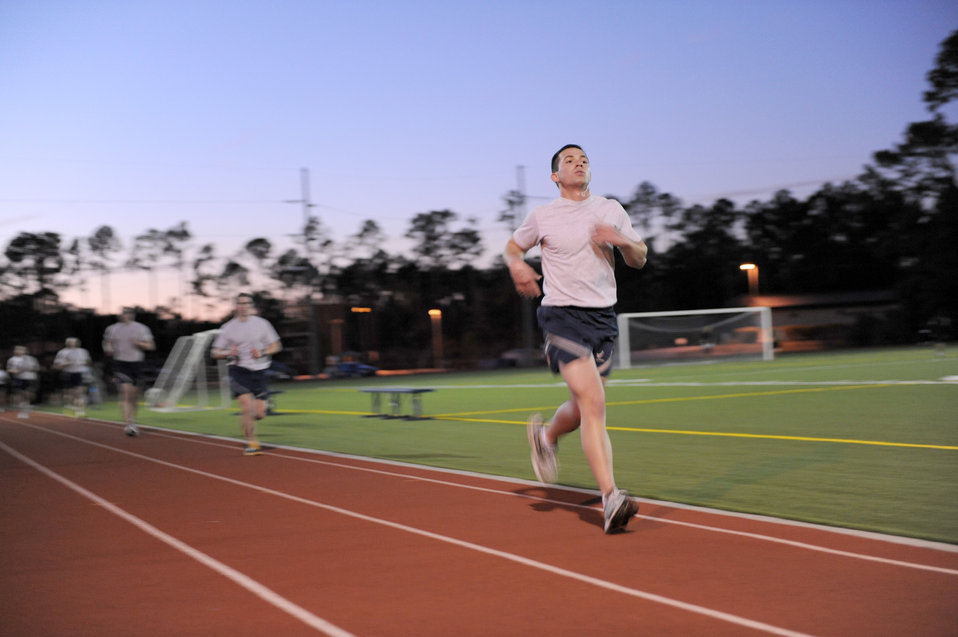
Combat control candidates vie for shot at scarlet beret

Senior Airman Douglace Fraities runs on a track during a week-long assessment at Hurlburt Field, Fla. Airman Fraities is a ground radio communications apprentice from Hickam Air Force Base, Hawaii. He is a cross-training candidate for the combat control career field. He took part in a combat controller and special operations weather team assessment.